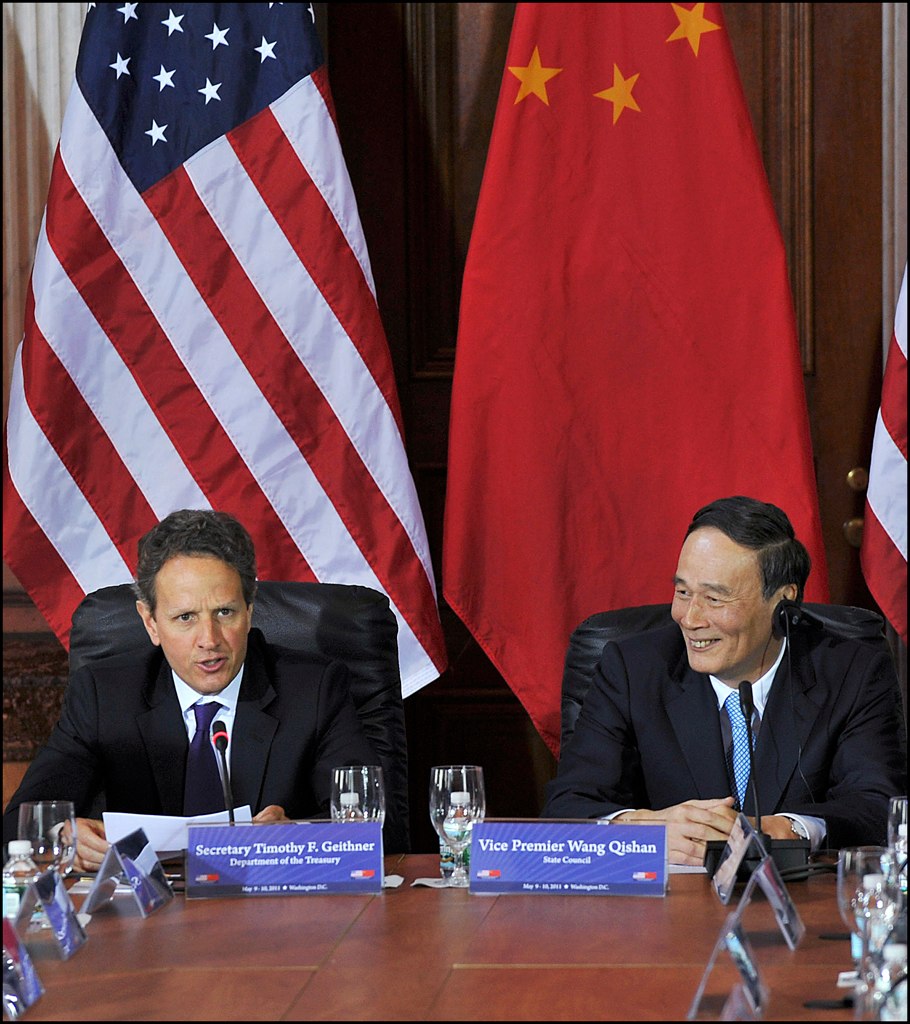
U.S.-China Strategic and Economic Dialogue

Secretary Geithner and Vice Premier Wang delivered remarks at the opening session of the Economic Track of the S&ED and attended meetings of the S&ED at the Treasury Department.